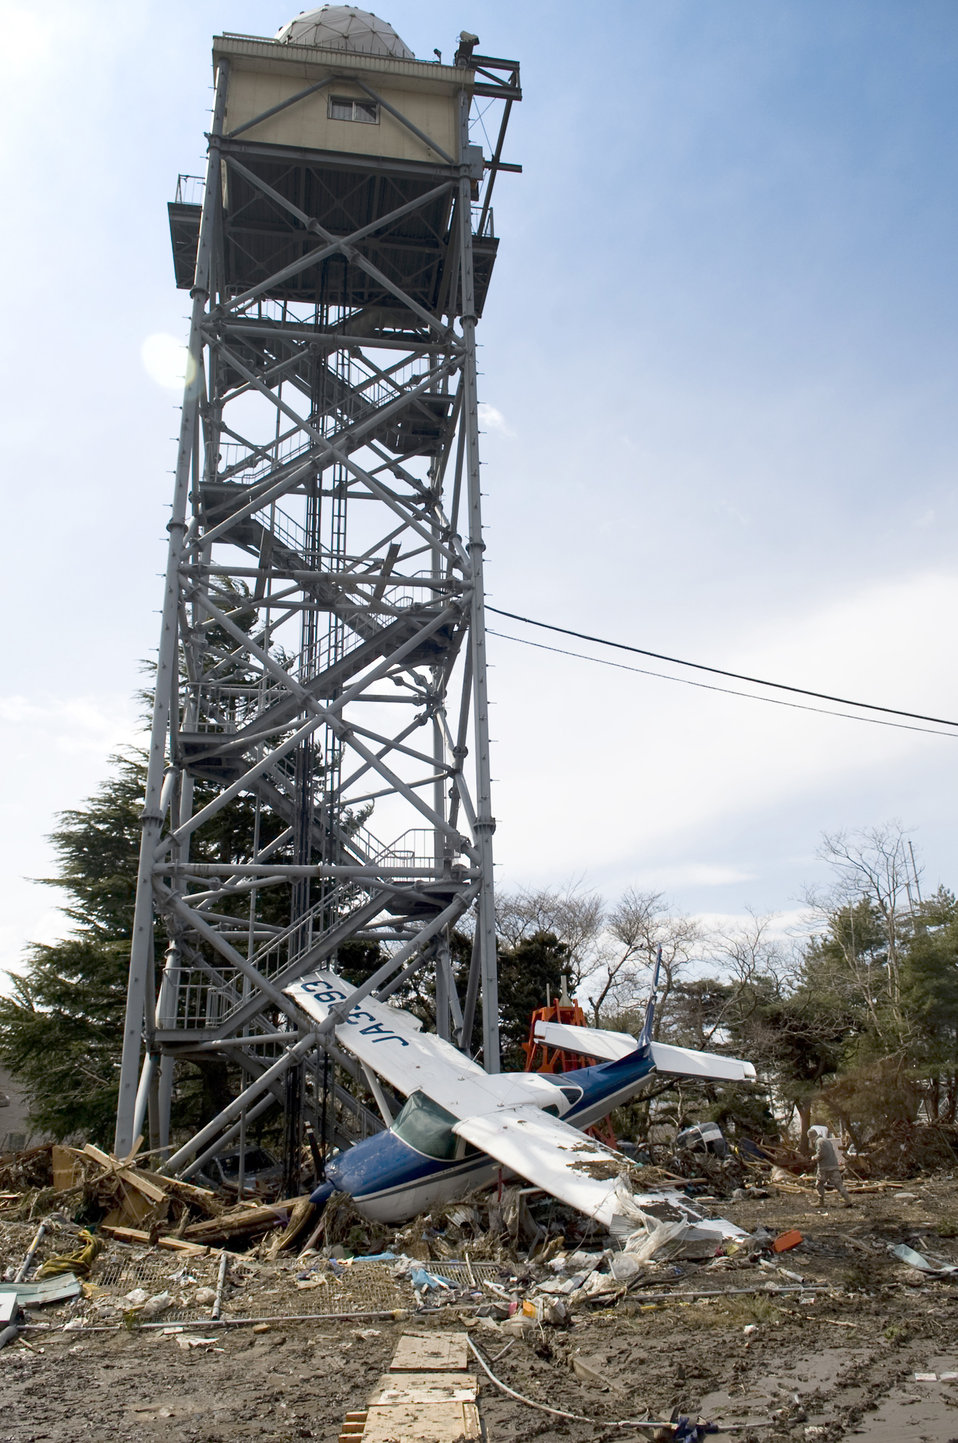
Airmen work with Japanese air controllers

The devastation can still be seen March 26, 2011, around Sendai Airport, Japan, more than two weeks after an earthquake and tsunami ravaged the region.